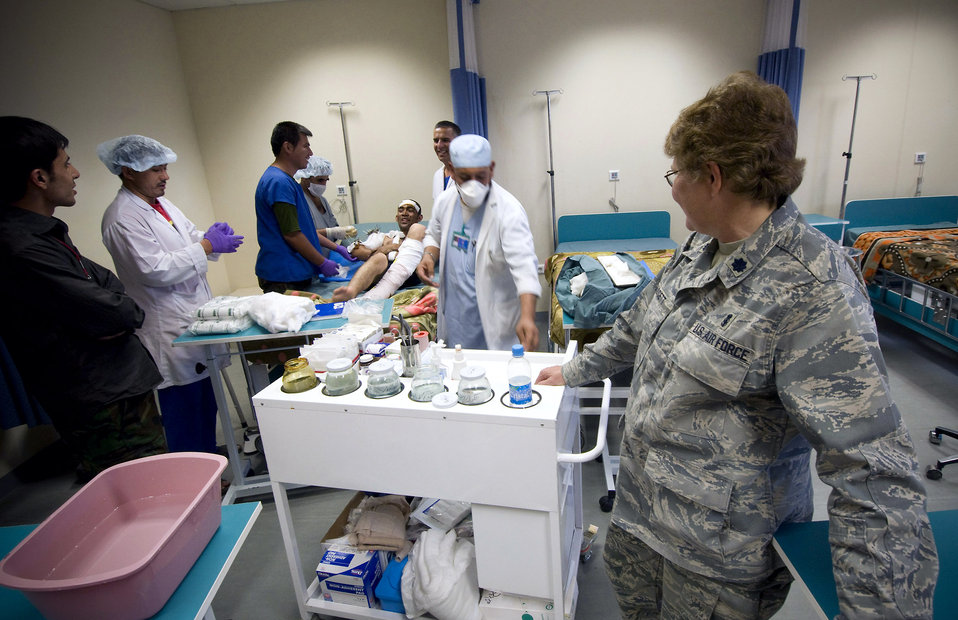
Airmen help build Afghan military medical capability

Lt. Col. Susan Bassett watches as Afghan national army nurses dress a patient's wounds Oct. 27 at the Kandahar Regional Military Hospital in Afghanistan. Colonel Bassett is a registered nurse in the 205th Afghan Regional Security Integration Command embedded training team.